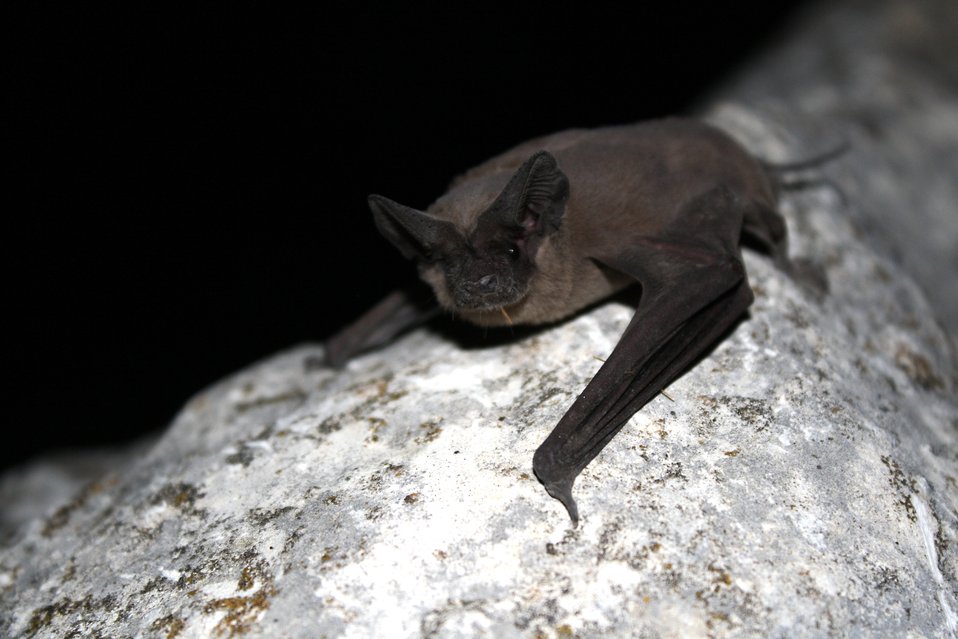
Mexican free-tailed bat (Tadaria braziliensis)